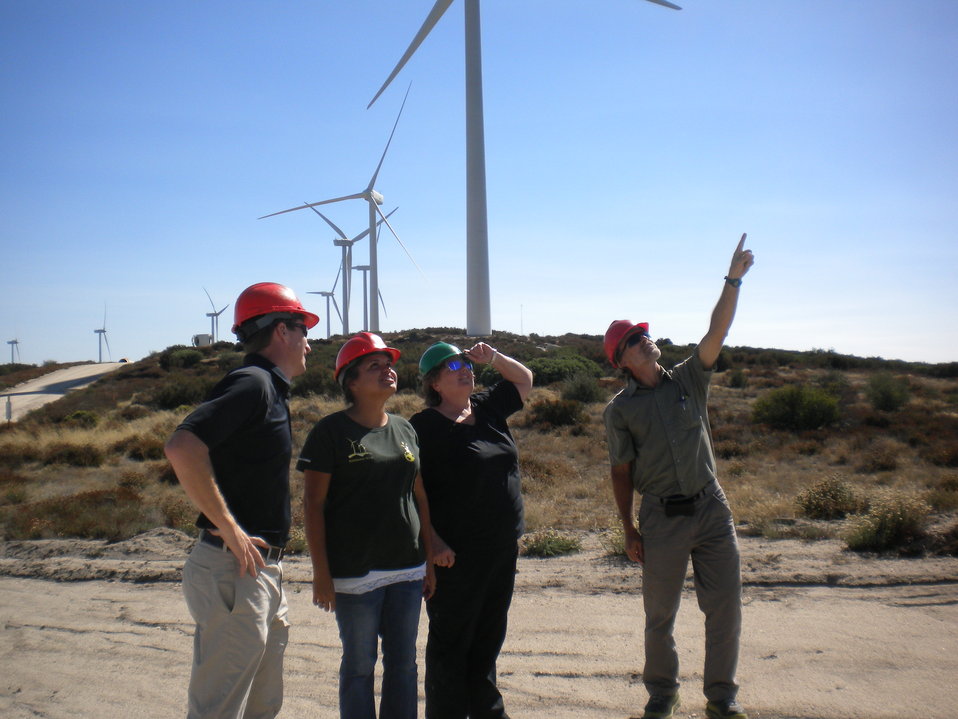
Office of Indian Energy Indian Energy Beat

Laura Quaha of the Campo Kumeyaay Nation and Melissa Estes with the Campo Envrionmental Protection Agency accompany START team members (Bob Springer and Robi Robichaud) from NREL at a September 2012 wind site assessment on the Campo Indian Reservation in San Diego County, California.